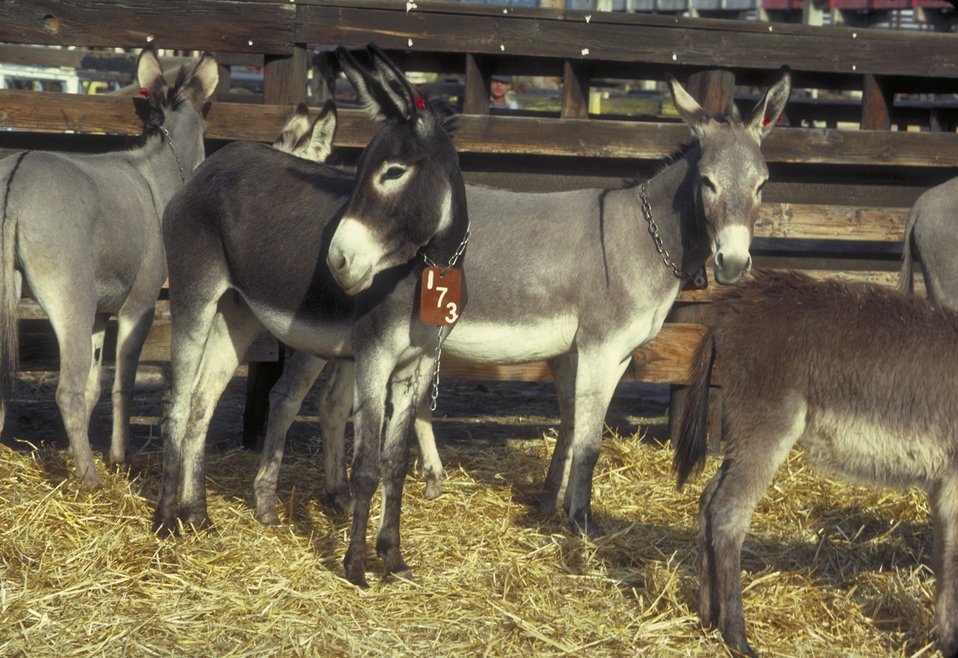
Burros ready for adoption.